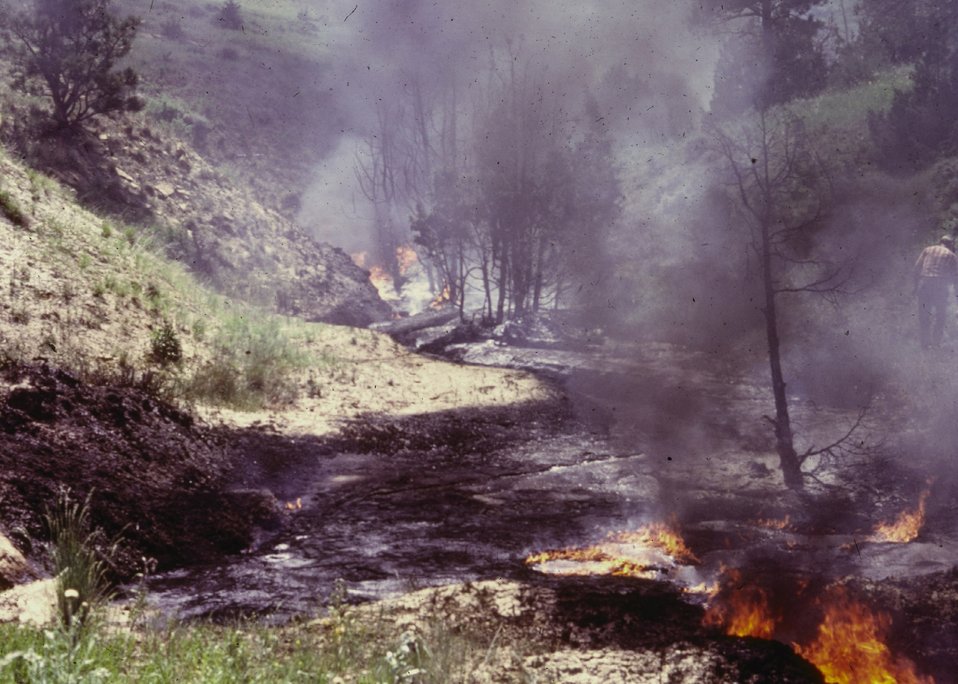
A wildfire in a drainage.